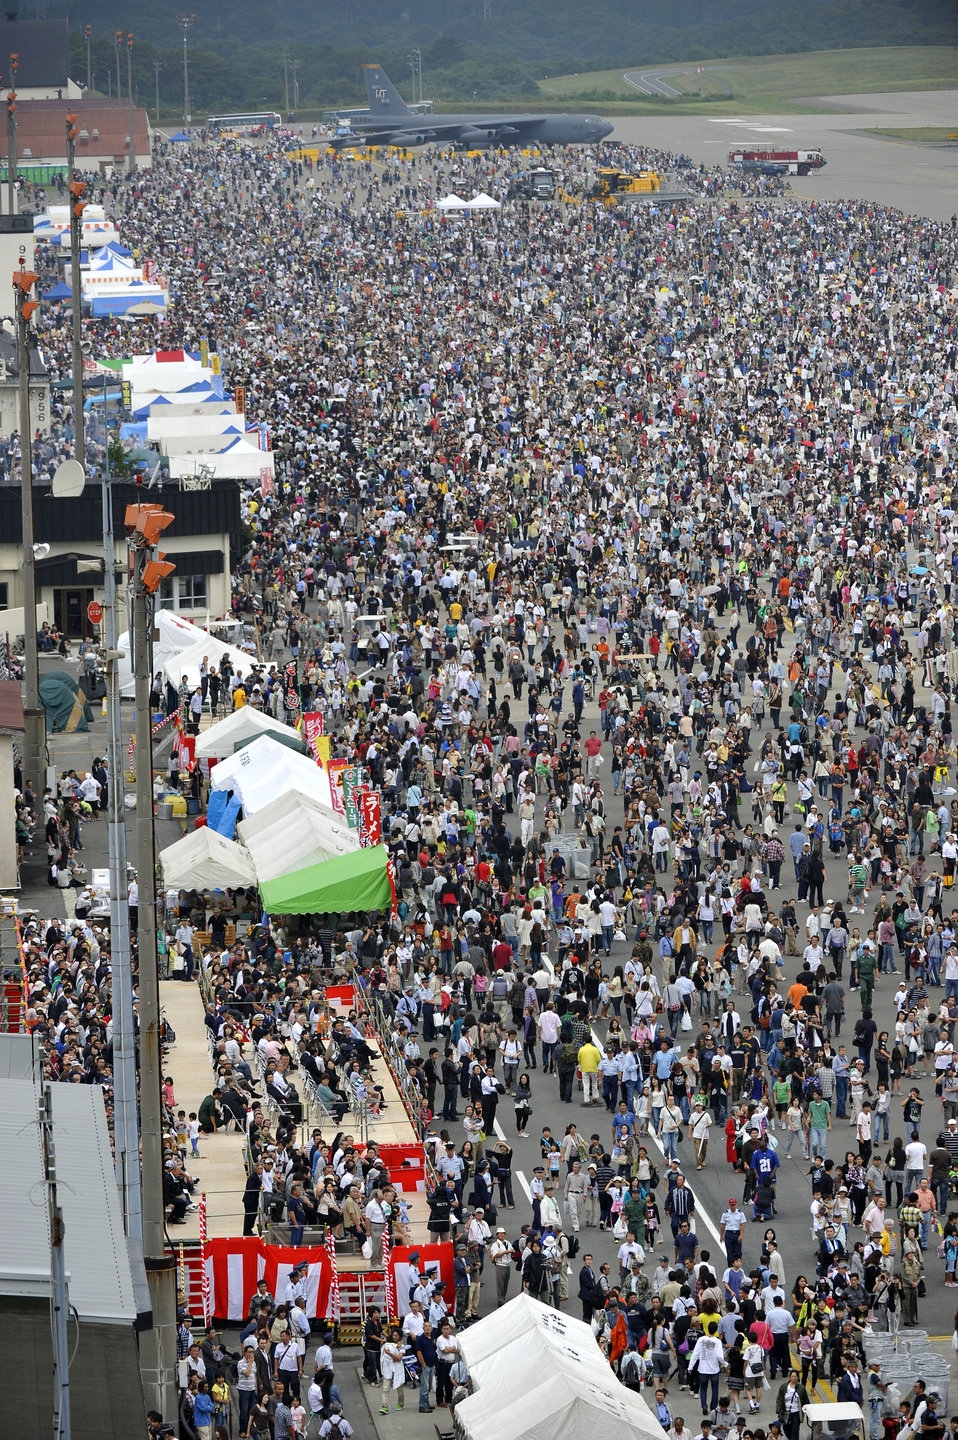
Misawa Air Festival

An estimated 100,000 people attended Misawa Air Festival Sept. 19, 2010, at Misawa Air Base, Japan.